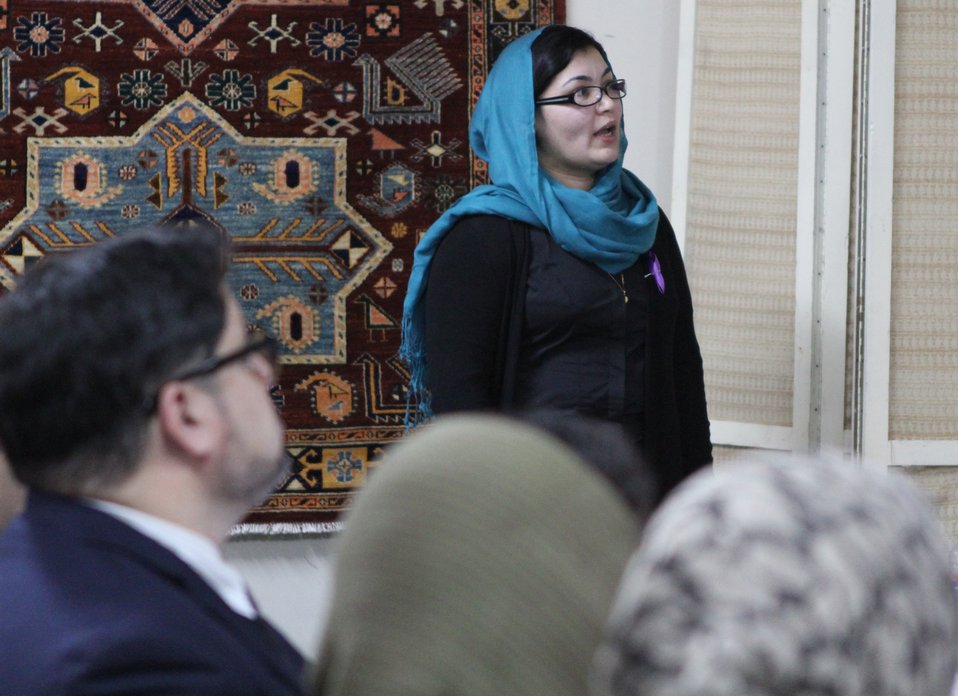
Presentation of the ACTA Civil Society analysis of the FY 1392 Afghan national budget